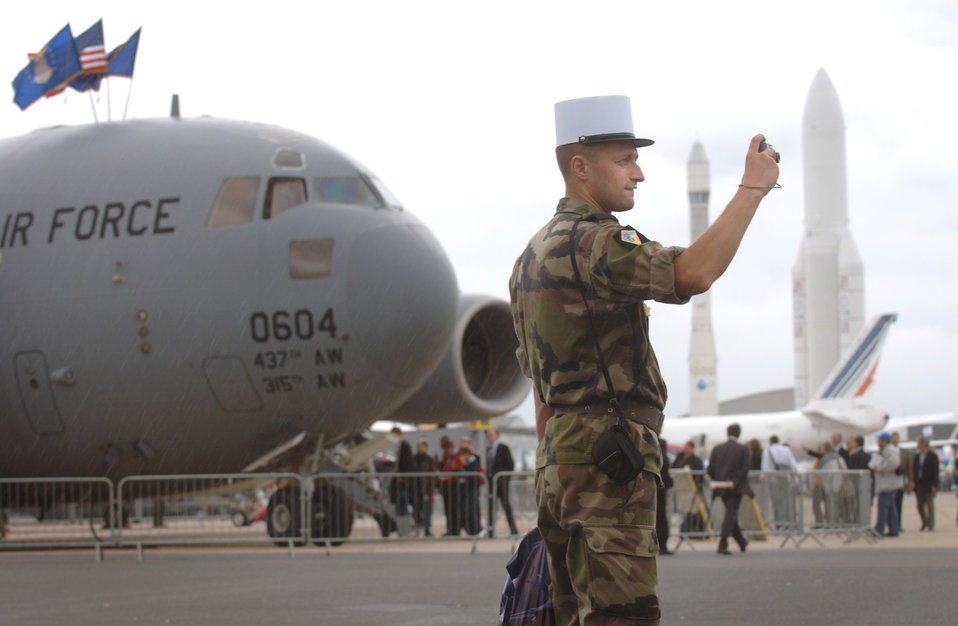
Airmen, aircraft on display at Paris Air Show

A Ukranian man assigned to the French Foreign Legion takes in the sites of the 2009 Paris Air Show June 18 at Le Bourget, France. The C-17 Globemaster III at left flew out of Charleston Air Force Base, S.C.